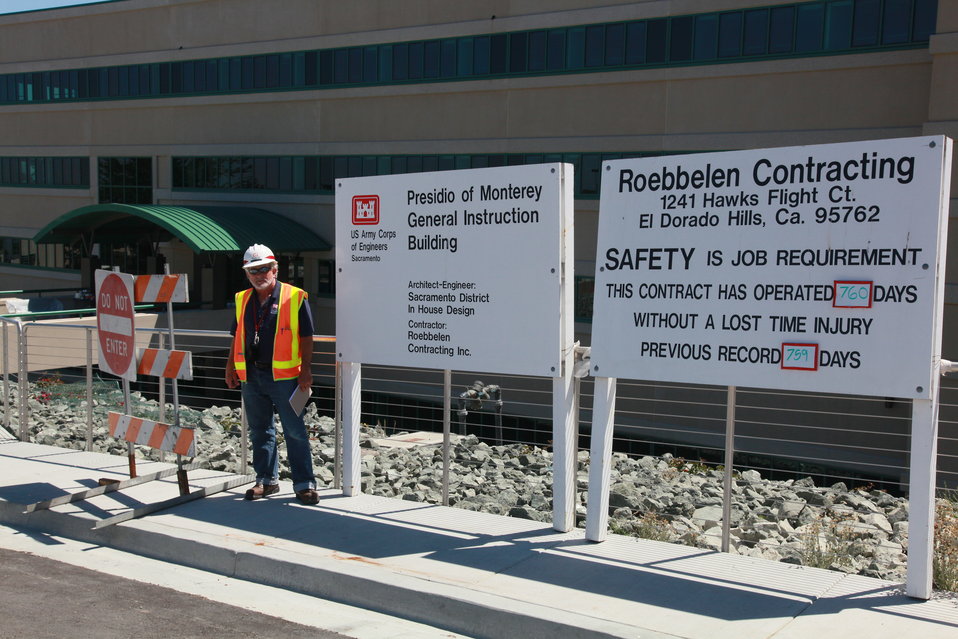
MONTEREY, Calif. (Sept. 21, 2010) - Rising above the hills of the Presidio of Monterey is the Defense Language Institute’s new general instruction building (GIB), completed in September by the U.S. Army Corps of Engineers Sacramento District. The $28 million building will house 60 classrooms for military students learning foreign languages, the first of three scheduled for Corps construction to accommodate the growing Defense Language Institute.